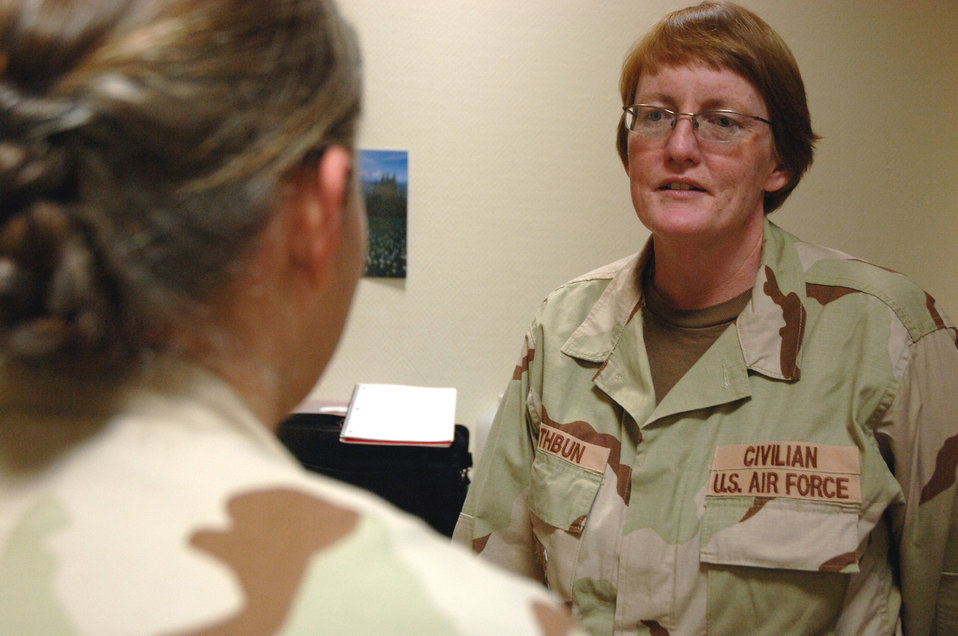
First civilian SARC deploys

Donna Rathbun, 379th Air Expeditionary Wing sexual assault response coordinator, or SARC, talks with an Airman at a deployed location in Southwest Asia. Ms. Rathbun is the first civilian SARC to deploy.